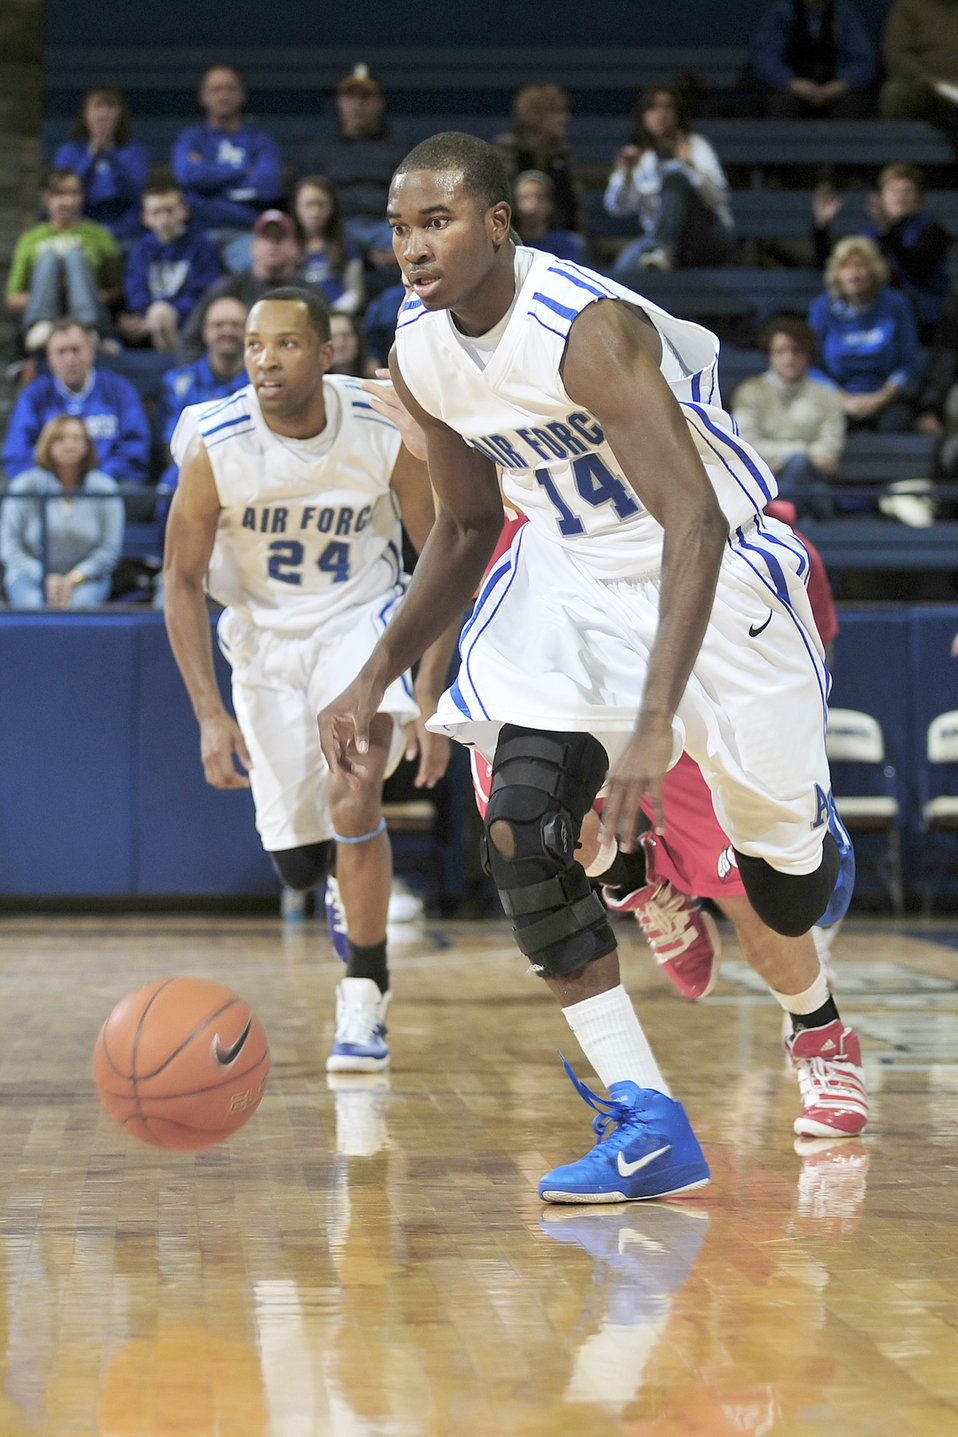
Falcons win home opener

Air Force Academy sophomore Mike Lyons charges towards the basket during the Falcons Mountain West Conference home opener Jan. 5, 2011, against Utah at the Academy's Clune Arena in Colorado Springs, Colo. Lyons netted a career high 26 points to lead the Falcons to an upset victory over the Utes by a score of 77-69.